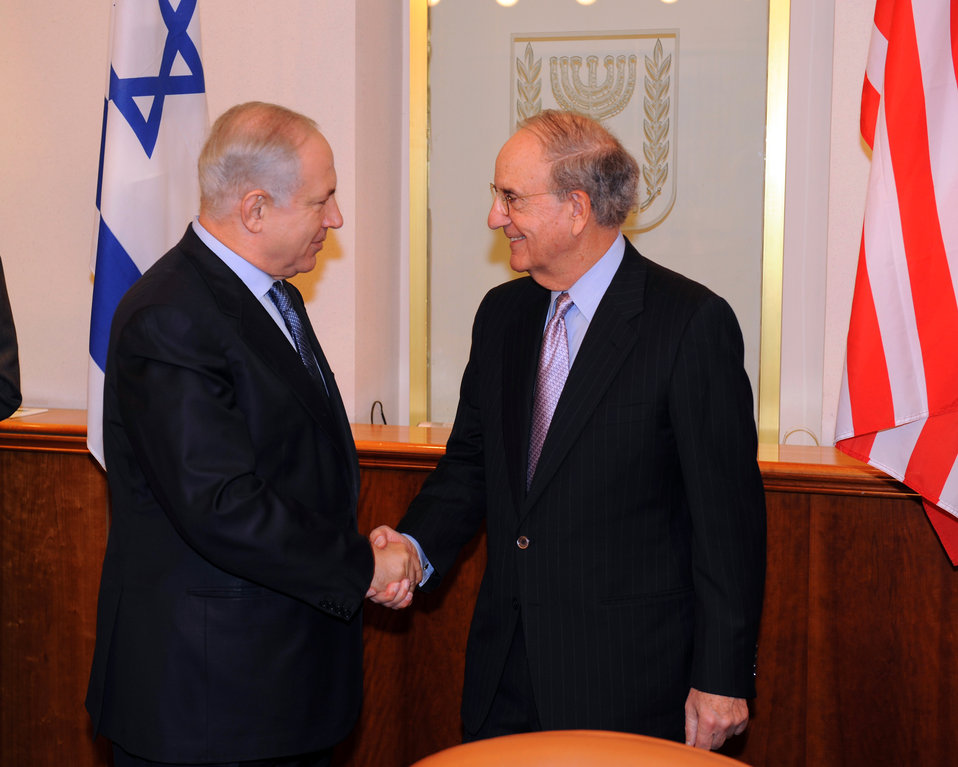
Special Envoy Mitchell Meets With Israeli Prime Minister

Special Envoy George J. Mitchell meets with Israeli Prime Minister Benjamin Netanyahu at the Prime Minister Office in Jerusalem November 2, 2009.